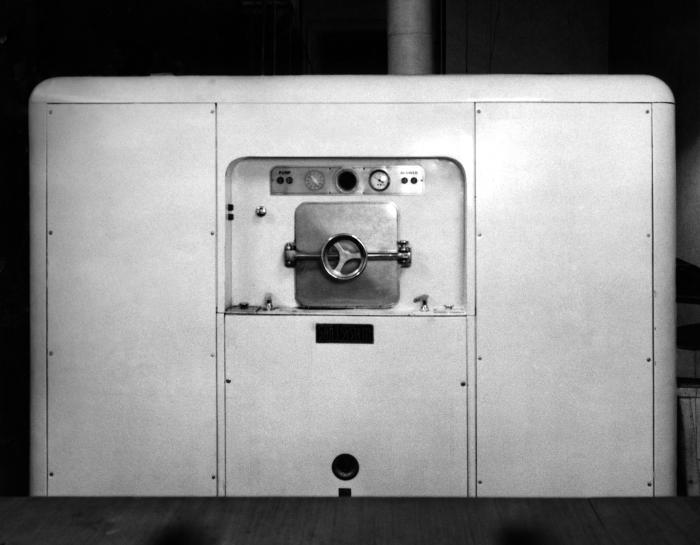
This 1950 historical photograph was provided by the Center for Disease Control's (CDC), National Institute for Occupational Safety and Health (NIOSH), and depicted a Sani-System cleaning unit in a chlorinated hydrocarbon dry-cleaning plant. In the 1950s, the Industrial Hygiene Division (IHD) investigated hazards in dry cleaning environments. New non-flammable cleaners had recently been introduced that created concerns about their toxicity. Modern dry-cleaning machines now employ a 'closed system', whereupon, clothes may be cleaned, and dried in one machine without having to be transferred between two functionally-different machines.As of 2005, there were approximately 36,000 dry cleaning businesses in the U.S. with most employing less than ten people. The focus today is on the perchloroethylene, used as a solvent in 85% of dry cleaning shops. It is carcinogenic in animals and suspected to be so in humans.